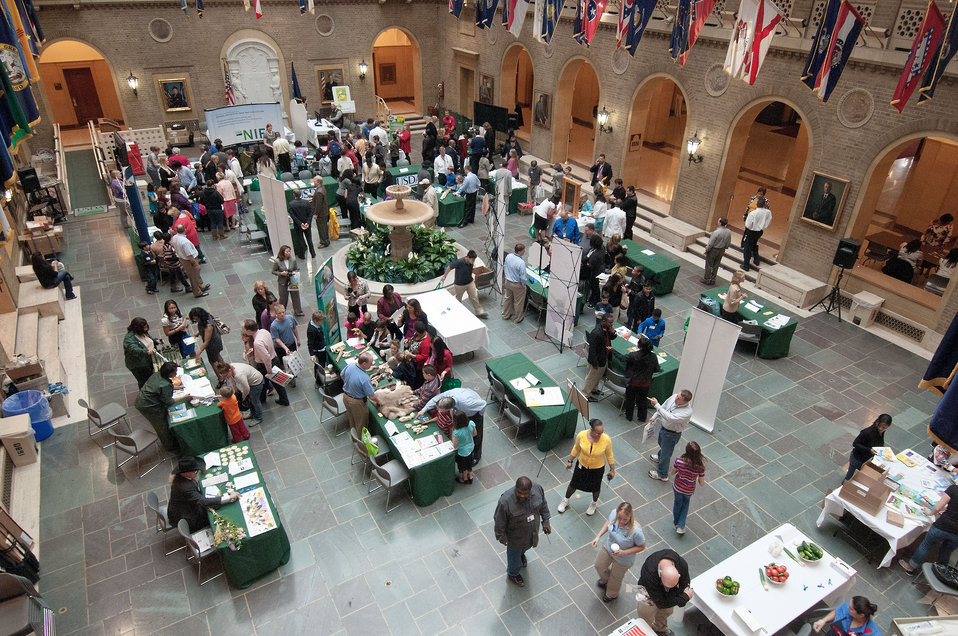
The United States Department of Agriculture sponsored the Take Our Daughters and Sons to Work and Earth Day in Washington, D.C., on Thursday, April 26, 2012. The exhibits showcased USDA programs associated with soil and water conservation, alternative and bio-energy.